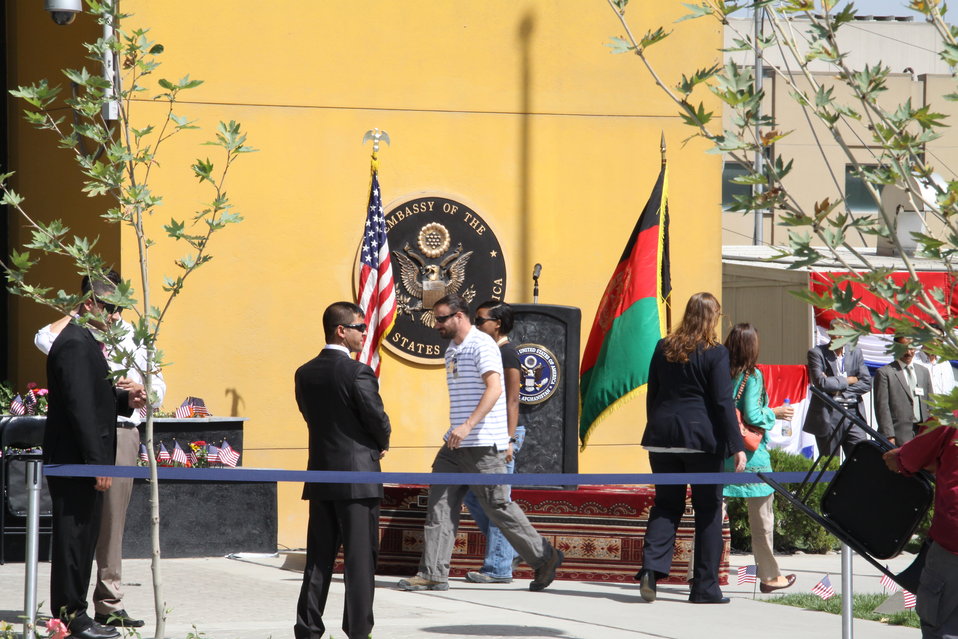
Kabul Official July 4th Celebration